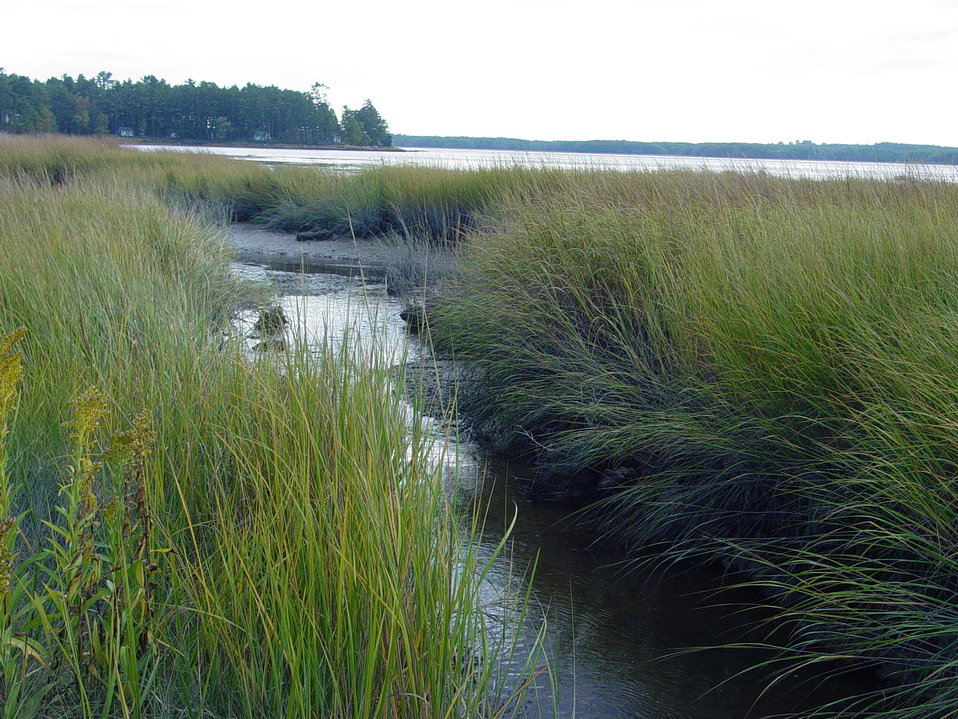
Salt Marsh Creek at Great Bay National Wildlife Refuge, Newington, NH.